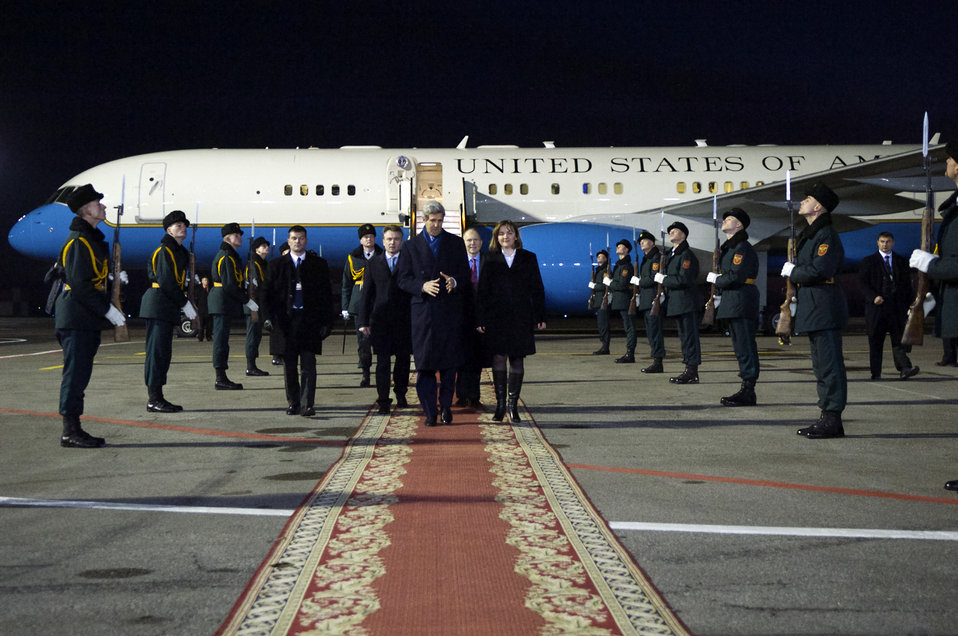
Moldovan Deputy Prime Minister Gherman Escorts Secretary Kerry Upon His Arrival to Moldova

Moldovan Deputy Prime Minister Natalia Gherman, right, escorts U.S. Secretary of State John Kerry as he arrives in Chisinau, Moldova, on December 4, 2013.